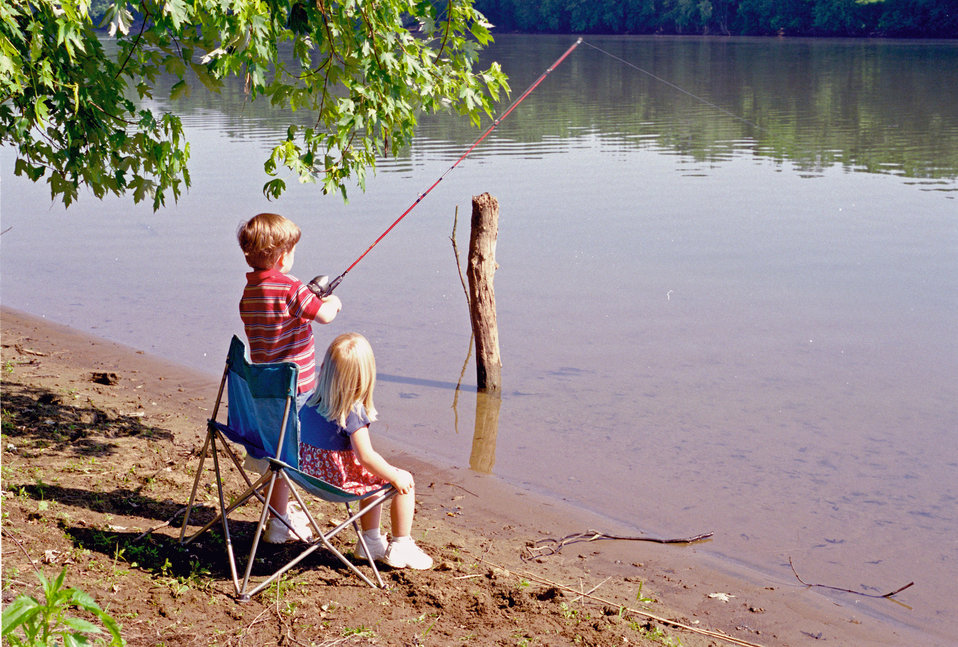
Kids fishing

Ohio River Islands National Wildlife Refuge, WV.